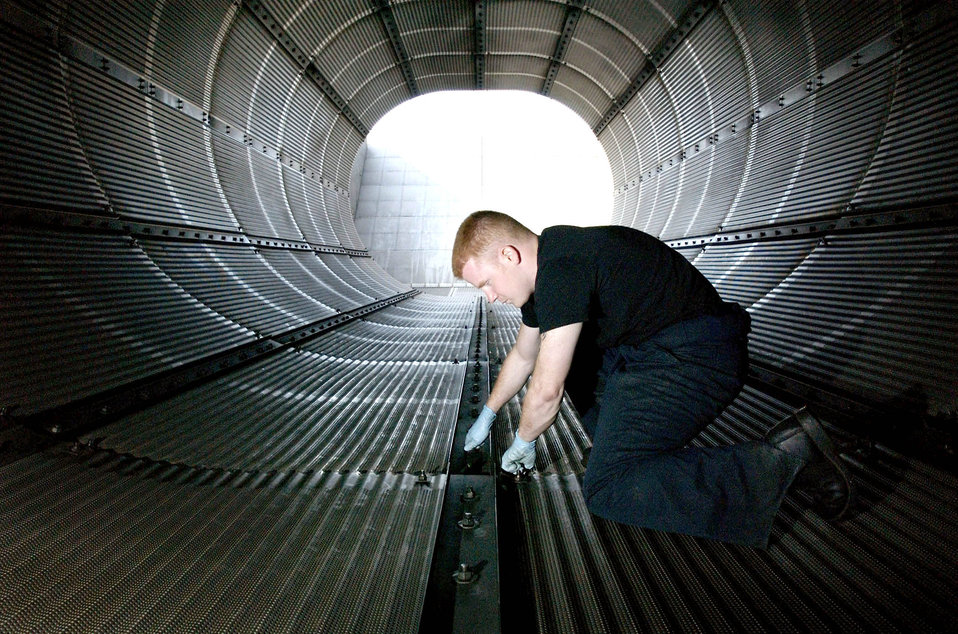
Hush, hush

RAMSTEIN AIR BASE, Germany -- Senior Airman Jake Rutherford inspects the rear section of the hush house here. The hush house was originally made for conducting engine tests for the F-16 Fighting Falcon. It is now used for C-130 Hercules engine repair. The 86th Maintenance Squadron's propulsion flight is a centralized intermediate repair facility making it the focal point for any C-130 engines needing repairs in Europe or for operations Iraqi Freedom and Enduring Freedom.